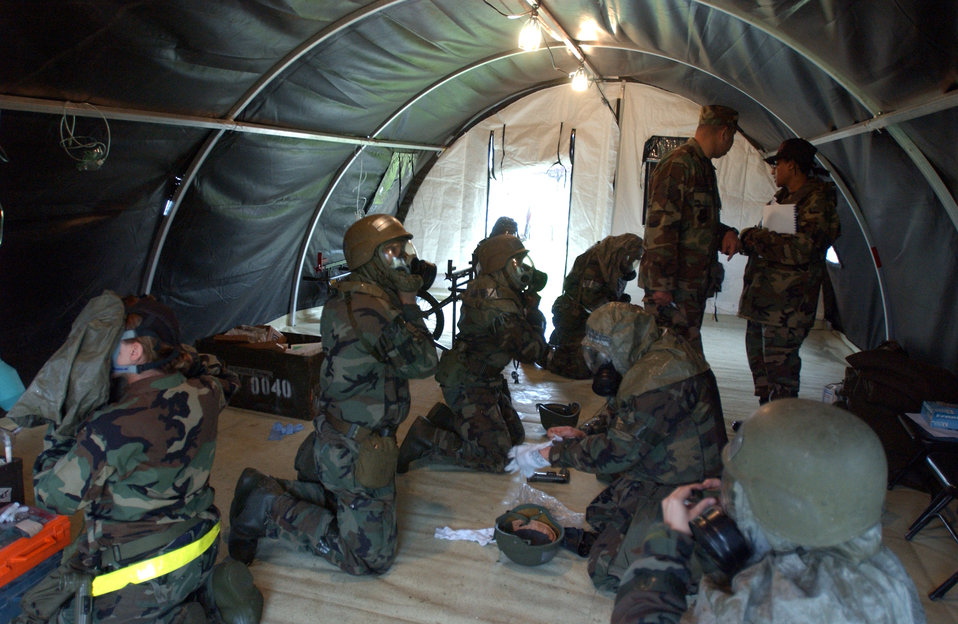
Medics train to be combat-ready

Airmen from the 31st Medical Group at Aviano Air Base, Italy, don chemical defense gear during combat medical readiness training on Thursday, April 27, 2006. The training prepares Airmen for deployments and rapid response in emergency situations.